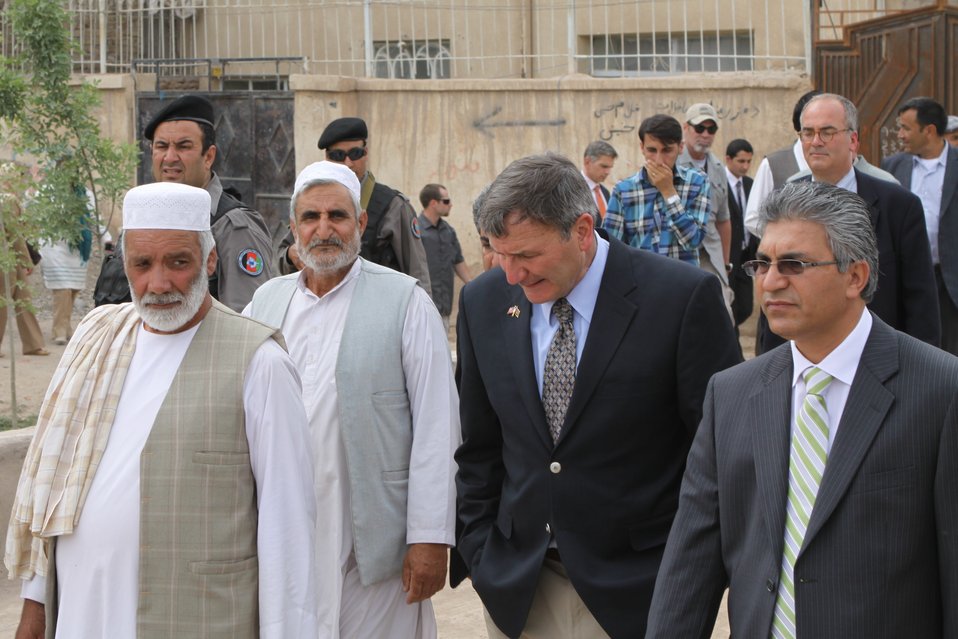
100525 Hirat Marble Conference 682